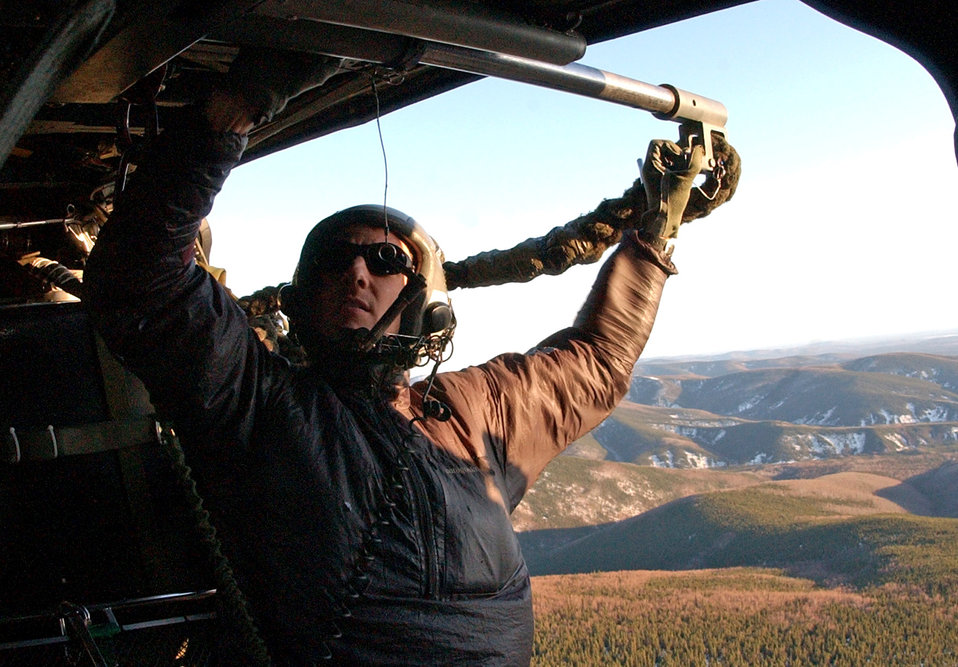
Alaska range, airspace critical to combat training

Pararescuemen Tech. Sgt. Bobby Schnell prepares to fast rope out of an HH-60G Pave Hawk helicopter April 17 at Eielson Air Force Base, Alaska. Sergeant Schnell is with the 210th Rescue Squadron Det. 1 as part of a combat search and rescue mission during Red Flag-Alaska 07-1.